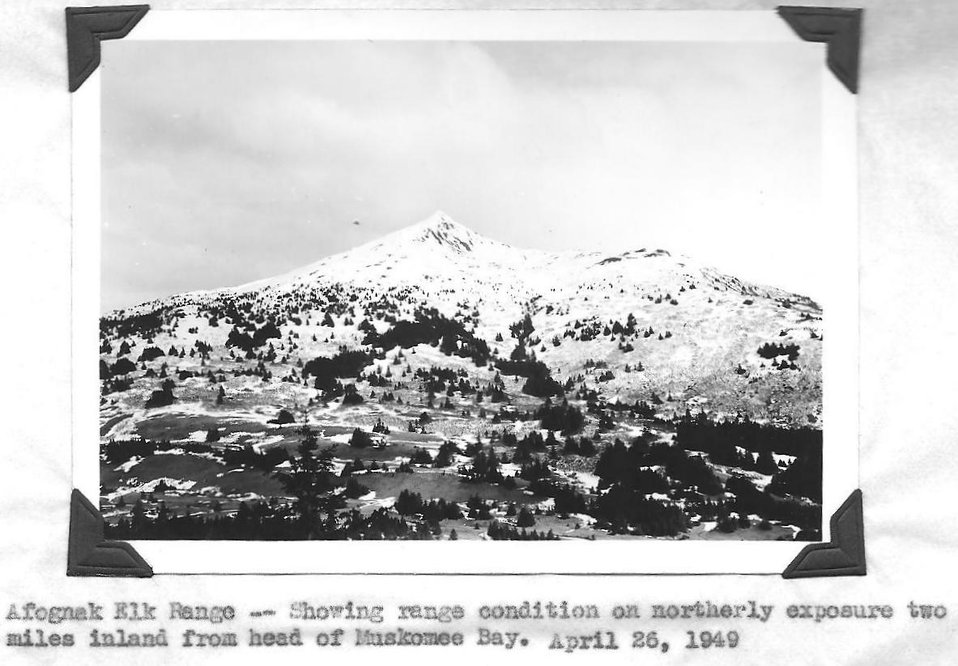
(1949) Afognak Elk Range

Credit: USFWS

Source and Contact: Kodiak National Wildlife Refuge